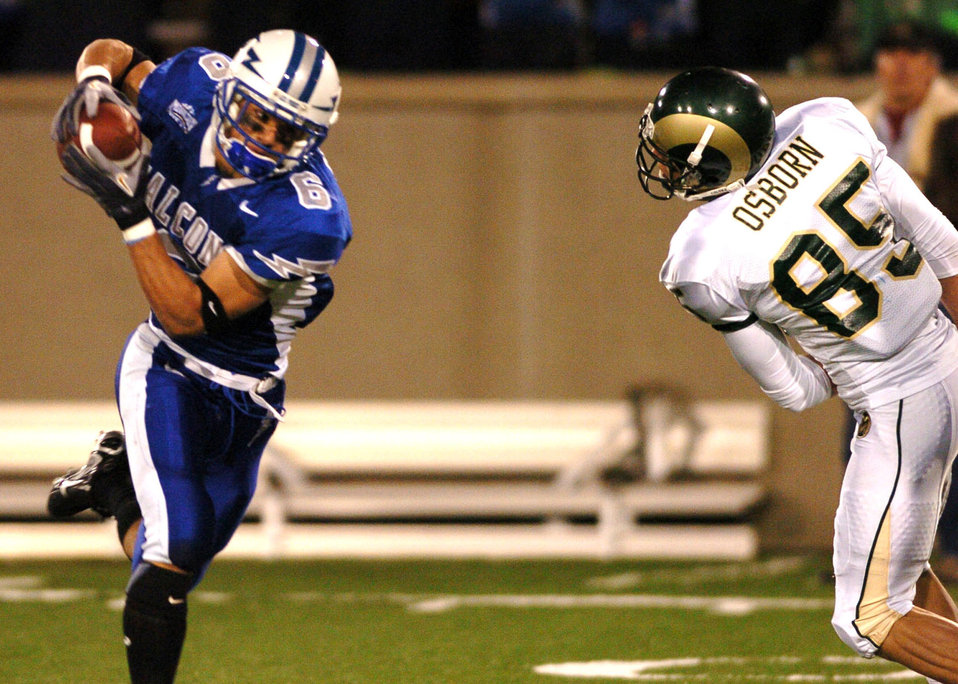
Game winner

Air Force cornerback Chris Sutton intercepts a late-game pass from Colorado State quarterback Caleb Hanie Thursday night to end CSU's hopes of winning the game. After trailing at halftime 21-3, Air Force scored 21 unanswered points in the second half to win, 24-21.